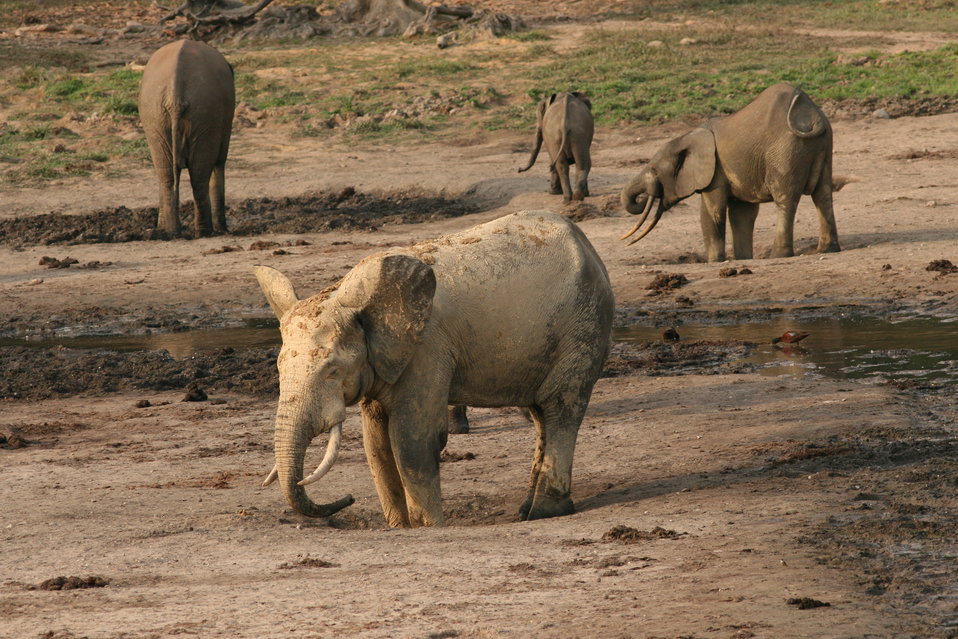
Forest elephant group 4

Both sexes in African elephants have ivory tusks. Elephant males have bigger, thicker tusks than females.